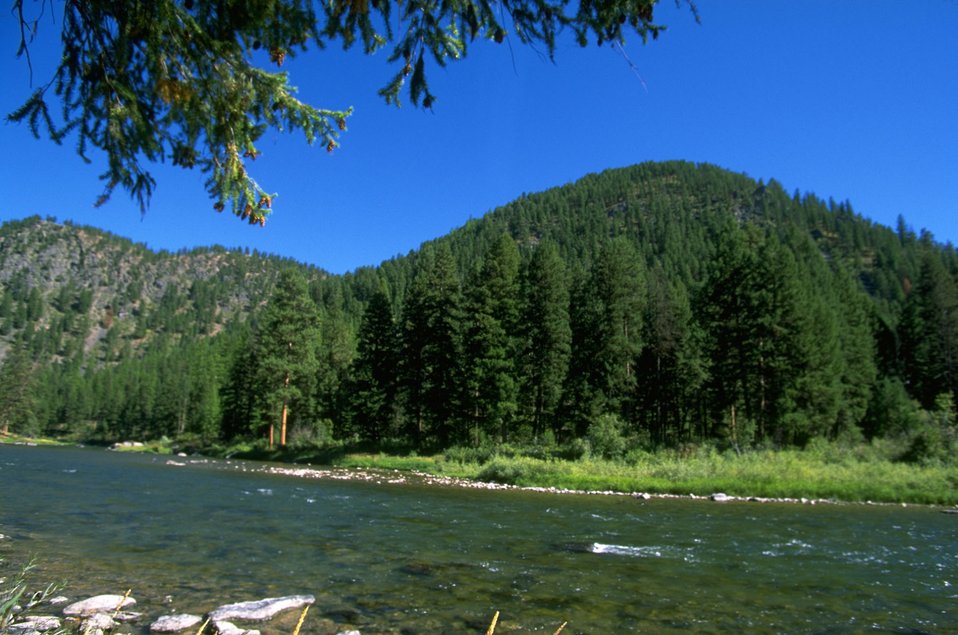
Scenic shot of Blackfoot River